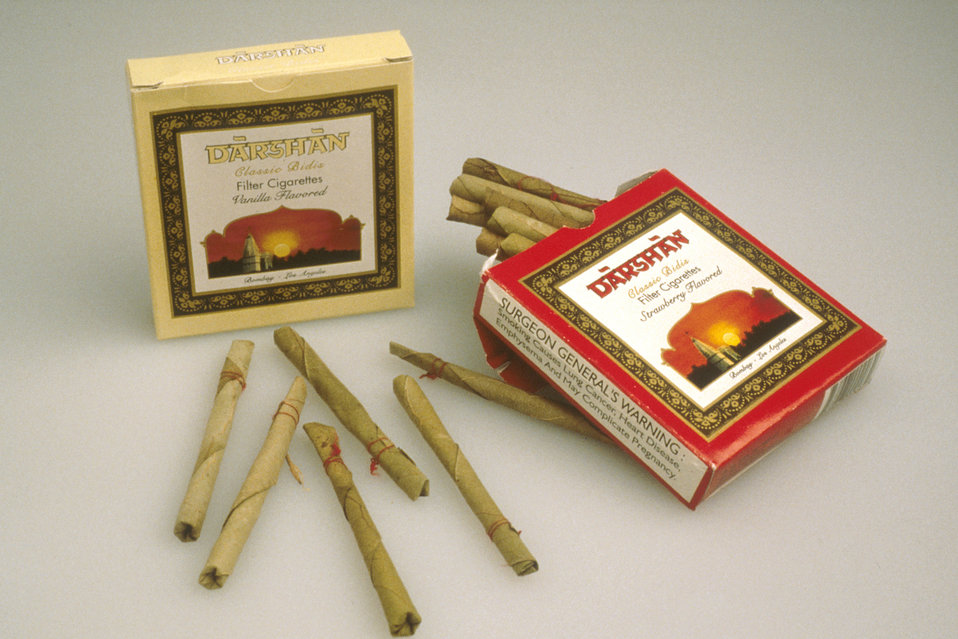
English:
Title Cigarette Packs Description Two packs of Darshan flavored filter cigarettes with several cigarettes out of the packs. Topics/Categories Risk Factors and Causes Type Color, Photo Source National Cancer Institute